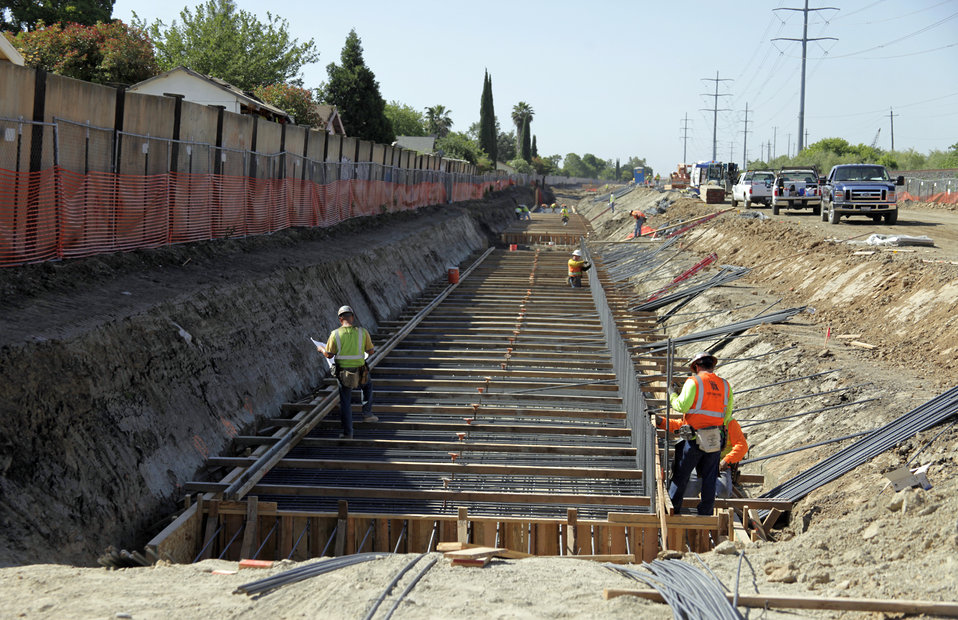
Morrison Creek flood wall construction continues May 31, 2012

Construction of a new flood wall continues along Morrison Creek in south Sacramento, Calif., May 31, 2012. Contractors for the U.S. Army Corps of Engineers Sacramento District are installing a 3,300-foot-long flood wall that will extend an existing flood wall, further reducing flood risk in the area. The work is a joint effort between the Corps, the Central Valley Flood Protection Board and the Sacramento Area Flood Control Agency. Completion is scheduled for 2013.